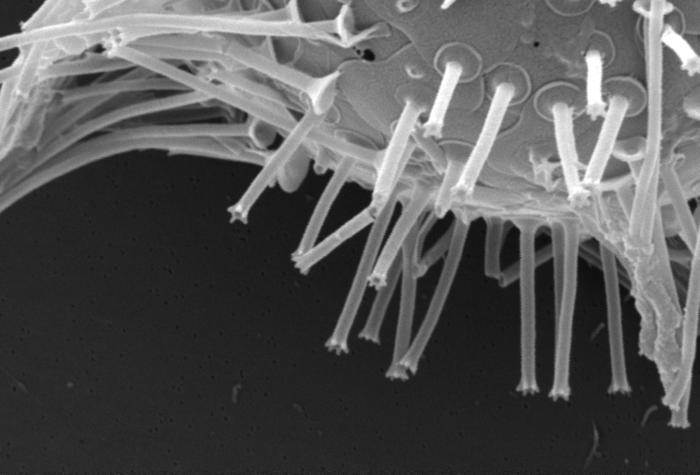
This scanning electron micrograph (SEM) of an untreated water specimen extracted from a wild stream mainly used to control flooding during inclement weather, revealed the presence of unidentified organisms, which included bacteria, protozoa, and algae. In this particular view, a microorganism is featured, the exterior of which is covered by numerous projections imparting an appearance of a sea urchin. This microscopic 'pin cushion' was teathered to its surroundings by a biofilm within which many bacteria, and amoeboid protozoa could be seen enmeshed as well. See PHIL 11682 and 11683, for additional views of this creature under successively greater magnifications. For a colorized version of this image see PHIL 11700.